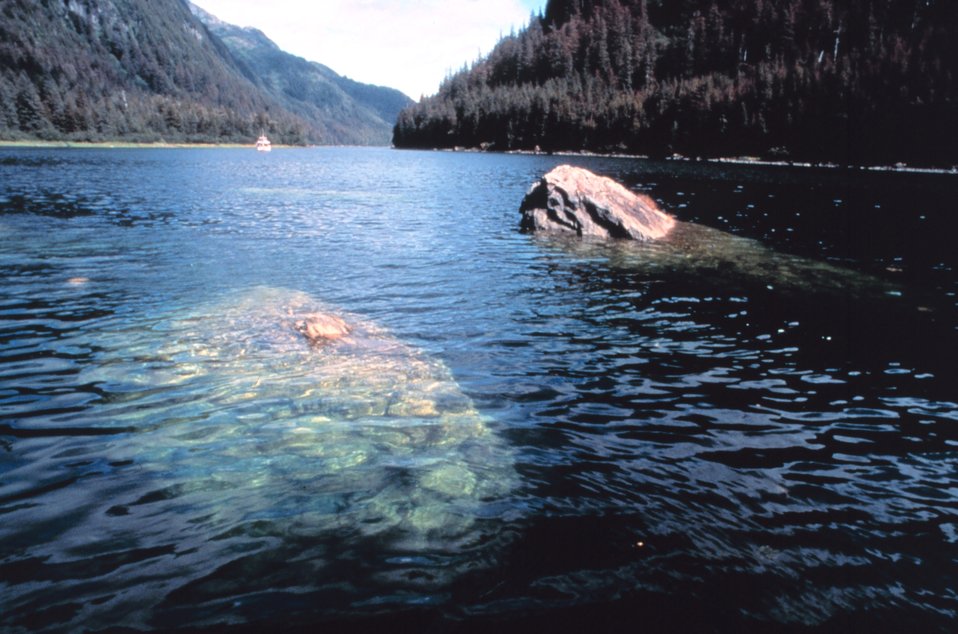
Boulders peaking above water surface in a Prince William Sound waterway